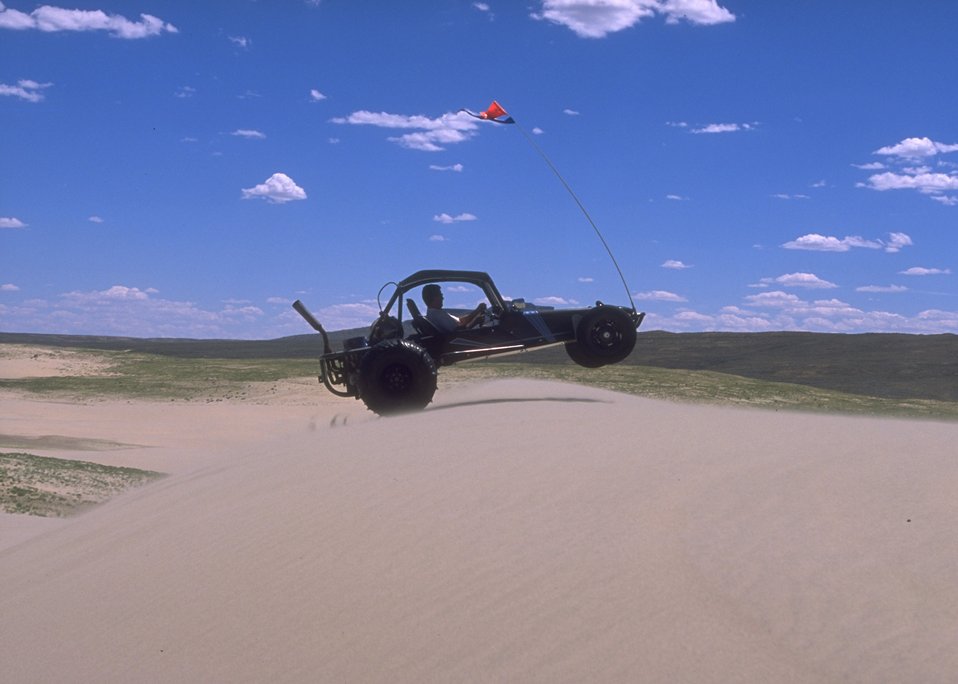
Sand Dunes OHV Area, Rock Springs Field Office.